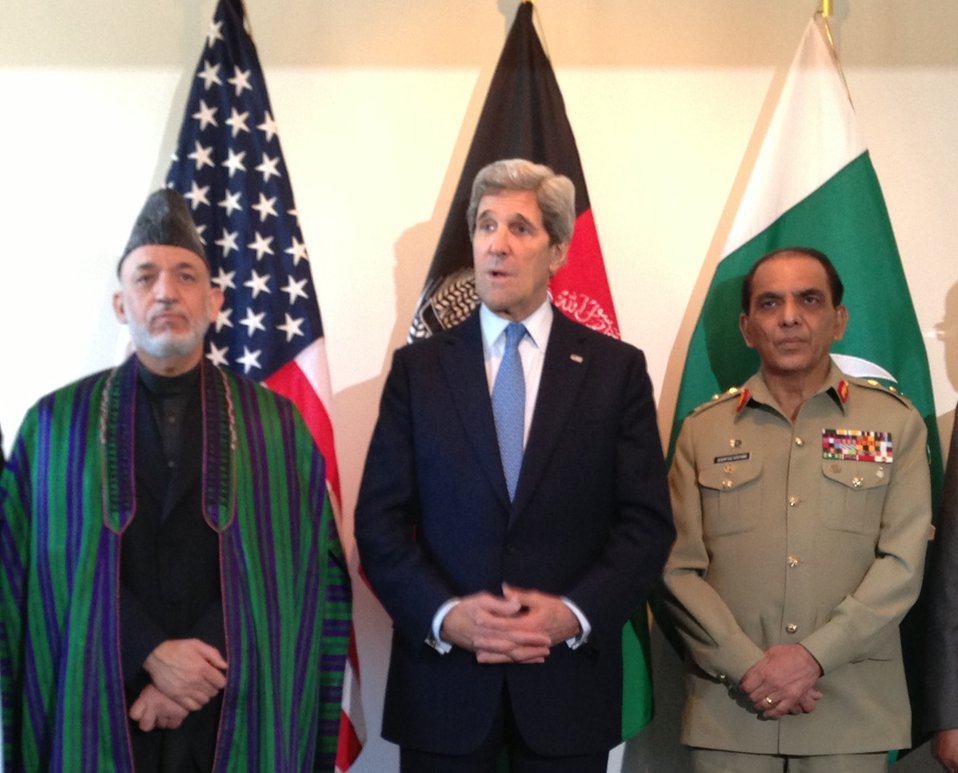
Secretary Kerry With President Karzai and General Kayani

Flanked by Afghan President Hamid Karzai and Pakistani Chief of Army Staff General Ashfaq Kayani, U.S. Secretary of State John Kerry prepares to make opening remarks before a trilateral meeting in Brussels, Belgium, on April 24, 2013.